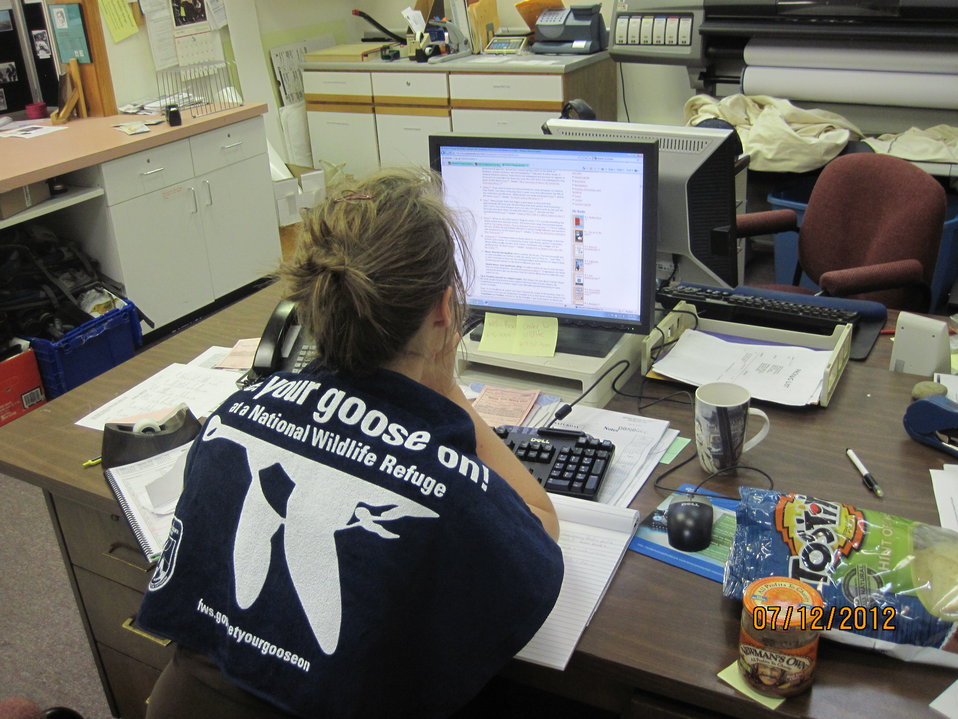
Get Your Goose On!

An administrative contractor hard at work under her GYGO! towel.

Photo Credit: Ward Feurt / usfws